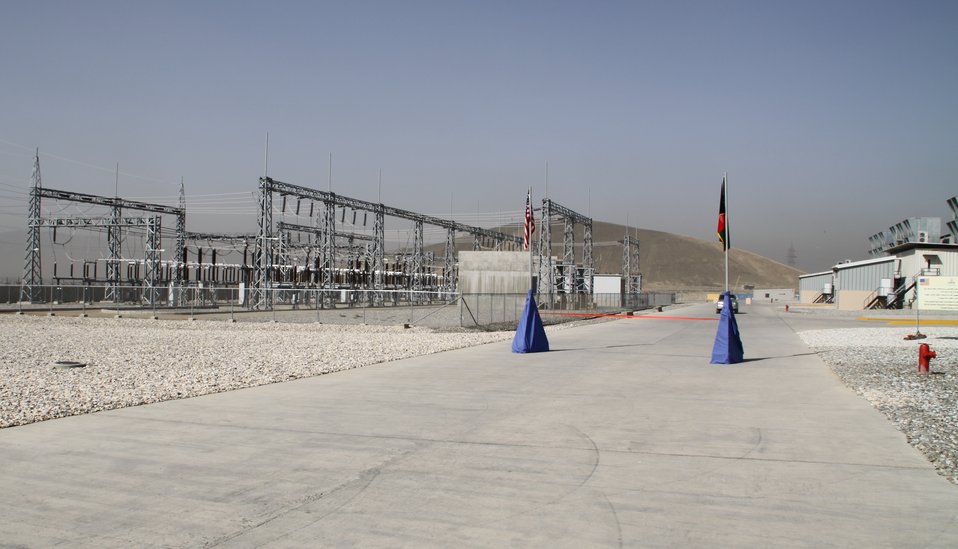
105 MW Tarakhil Power Plant Handover